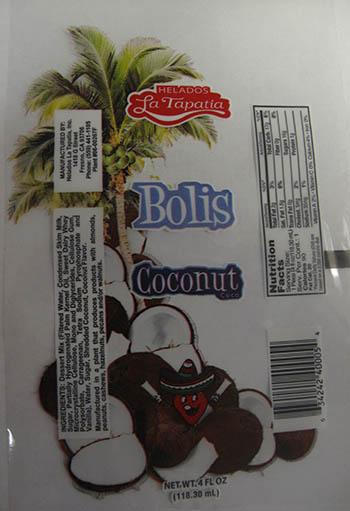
RECALLED – Ice cream products

March 19, 2014 – Product Recall – Helados La Tapatia, Inc. Recalls Products Because of Possible Health Risk.